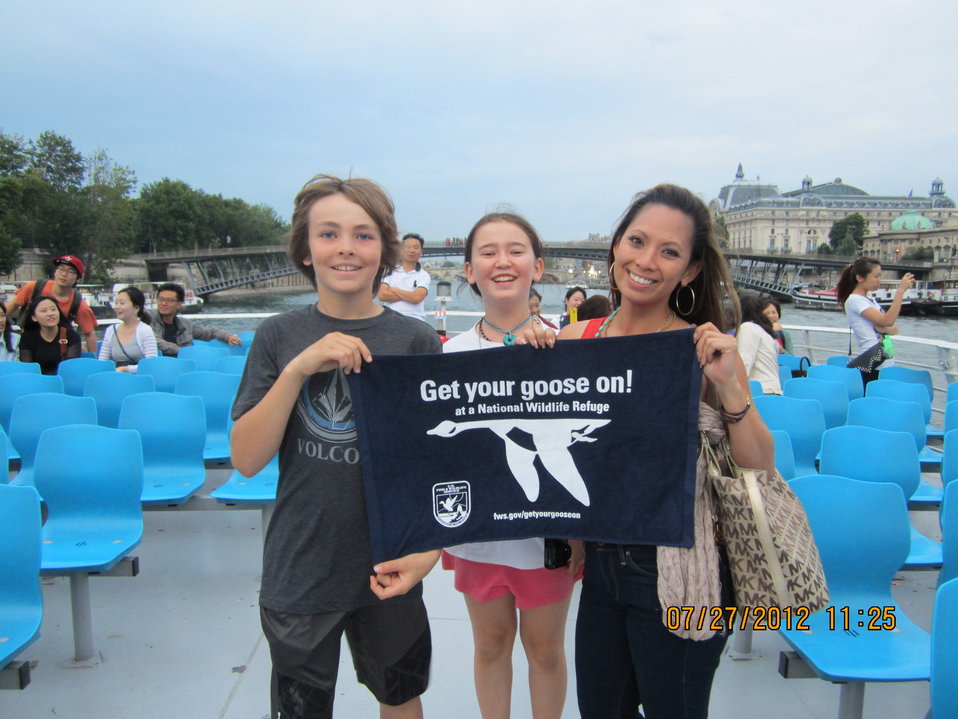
Get Your Goose On! in France